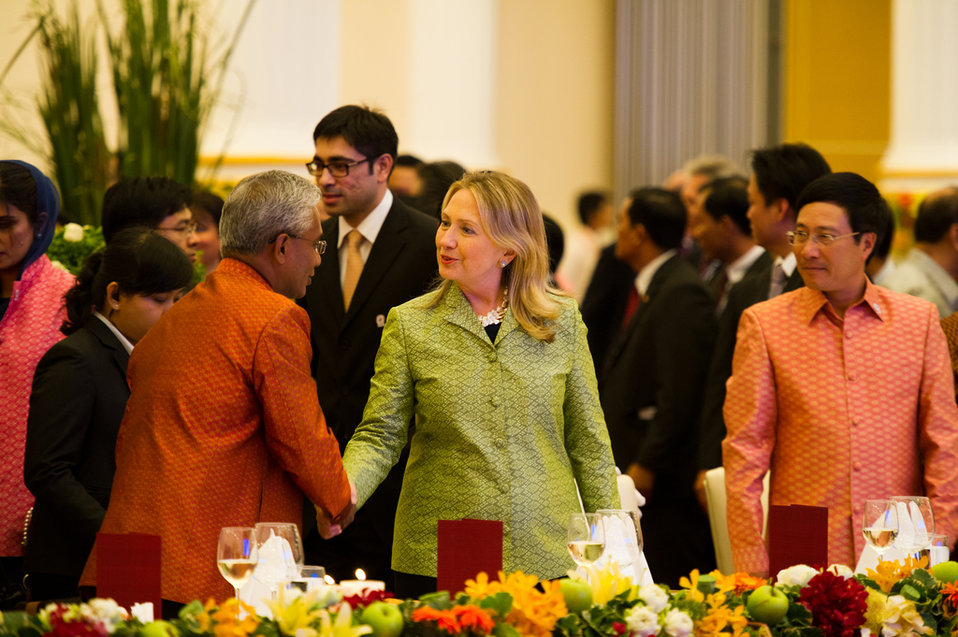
Secretary Clinton at the ASEAN Gala Dinner

U.S. Secretary of State Hillary Rodham Clinton attends the ASEAN Gala Dinner in Phnom Penh, Cambodia, on July 12, 2012.